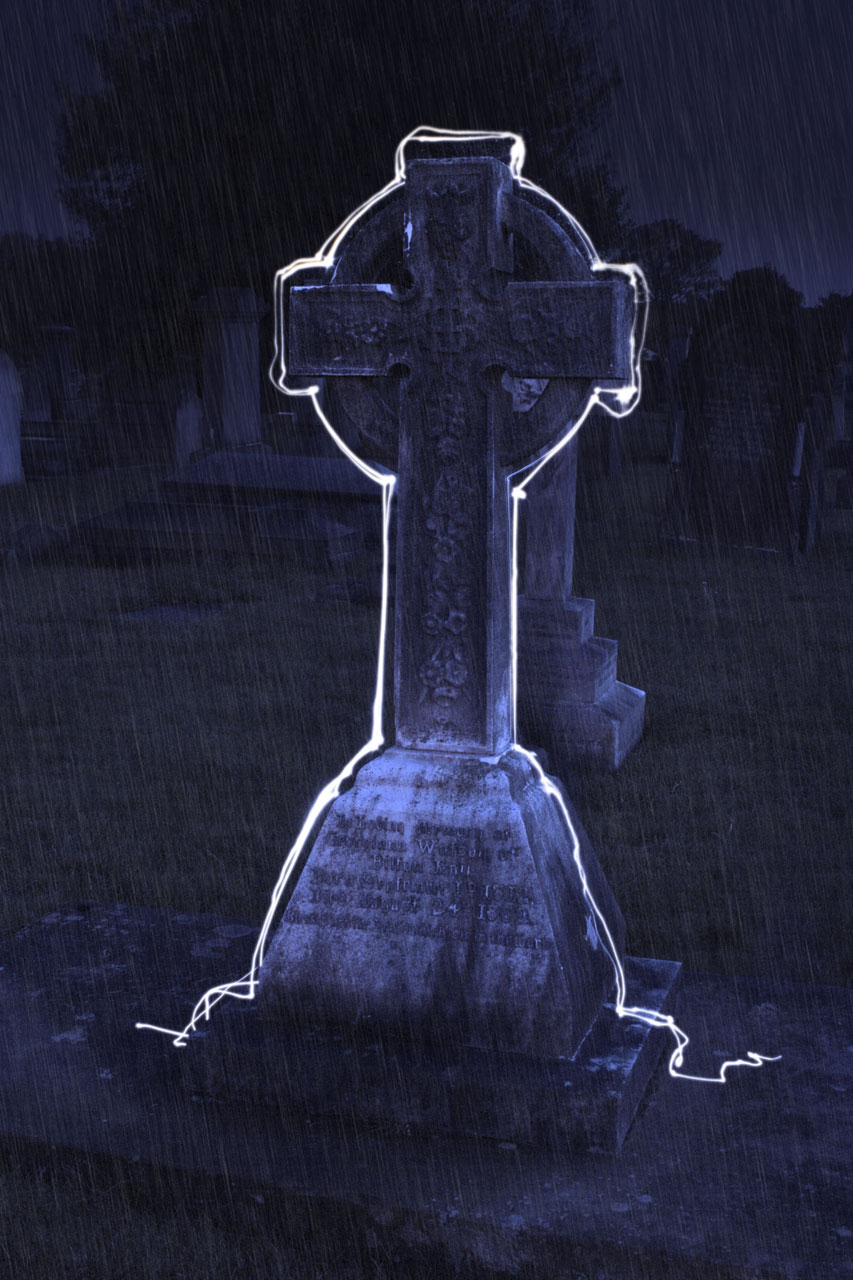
Gravestone

Painting with light on cemetery.